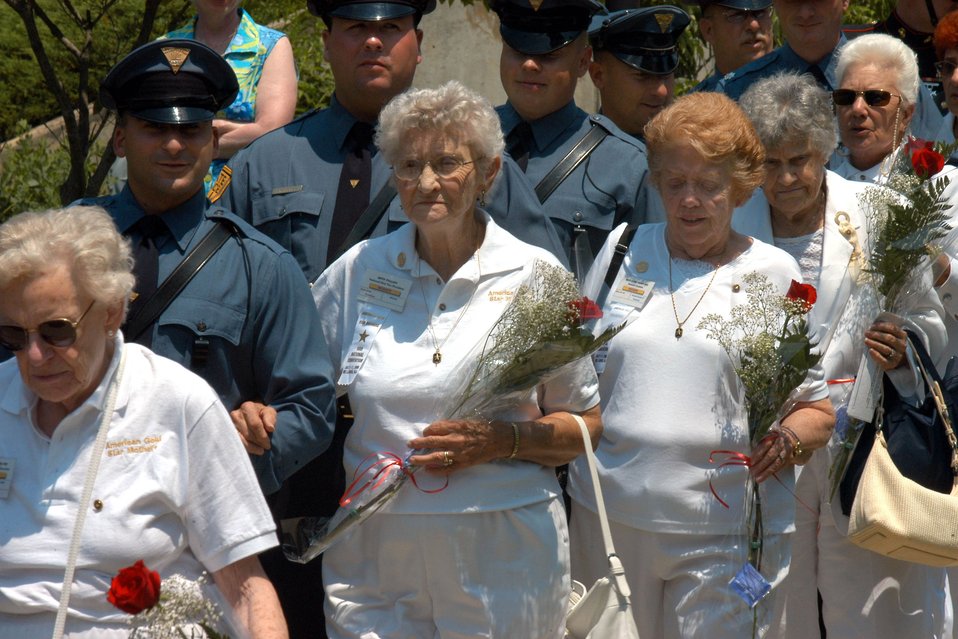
Gold Star Mothers

American Gold Star Mothers are escorted by New Jersey state troopers to the New Jersey Vietnam Memorial for a ceremony July 9 to honor them and the children they lost in America's conflicts.